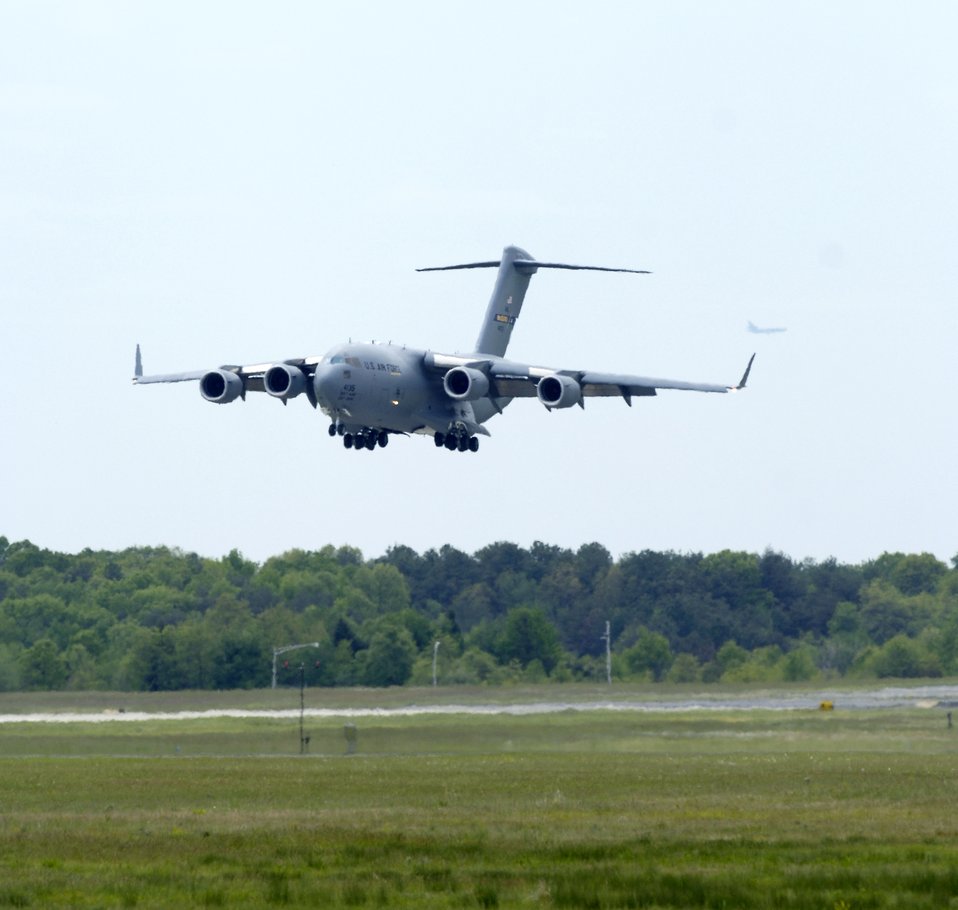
Globemaster in flight

A C-17 Globemaster III from the 305th Air Mobility Wing prepares to land at McGuire Air Force Base, N.J., on Wednesday, May 10, 2006. In the distance is a KC-10A Extender, also from McGuire.